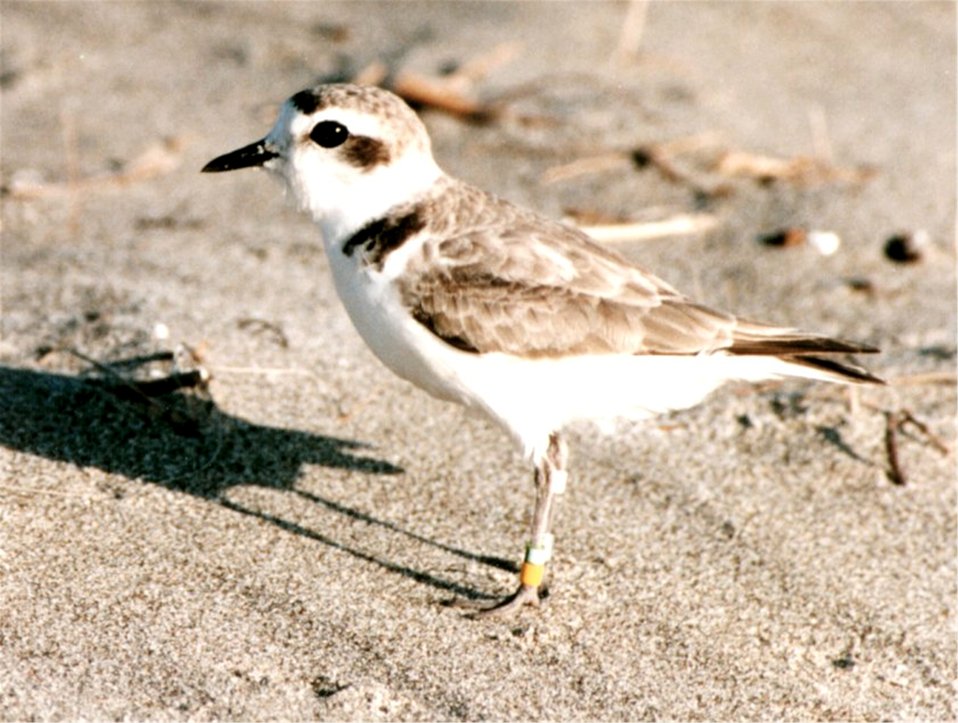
Western snowy plover